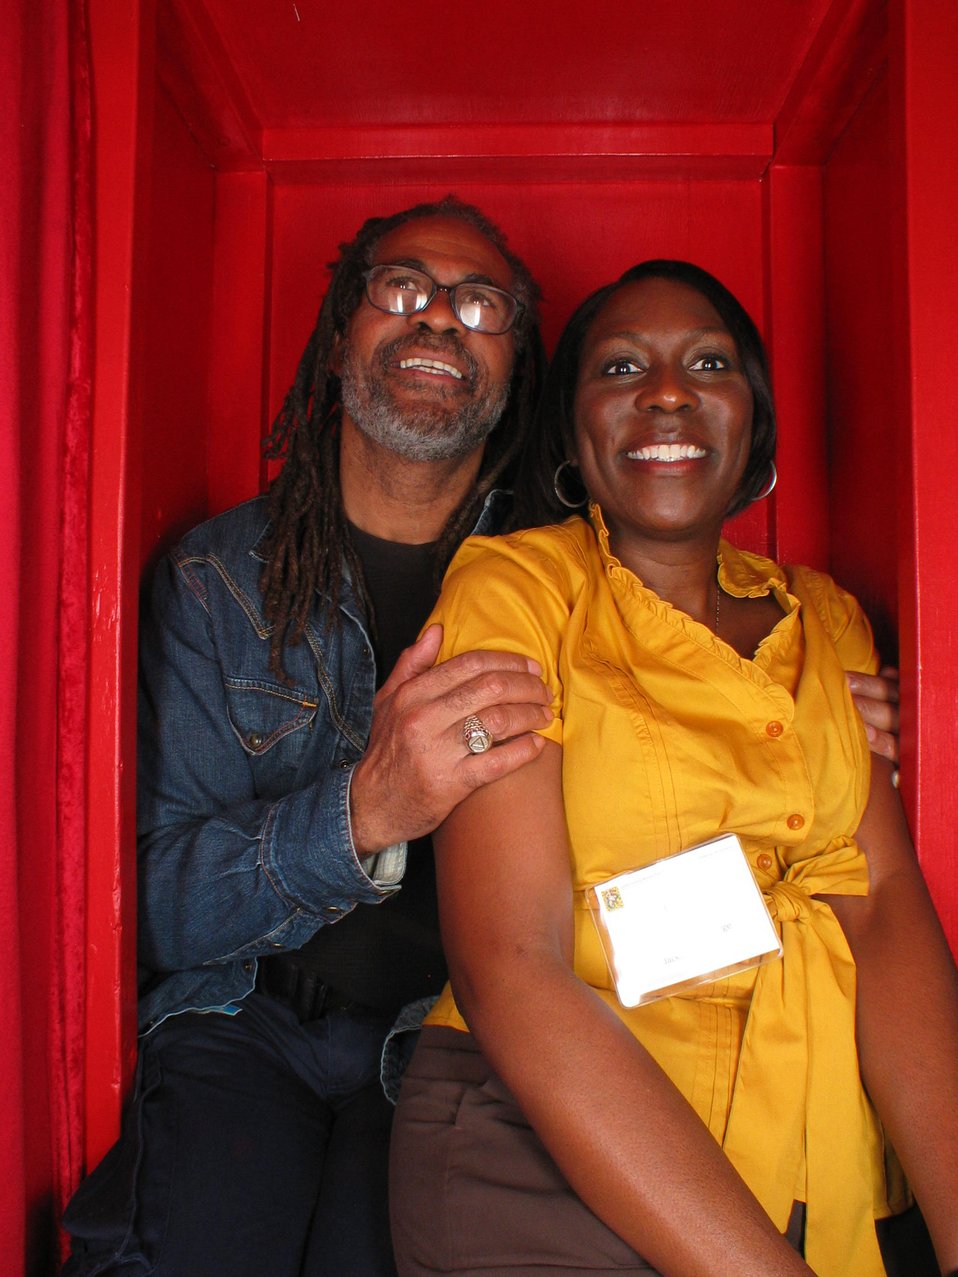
Facing AIDS